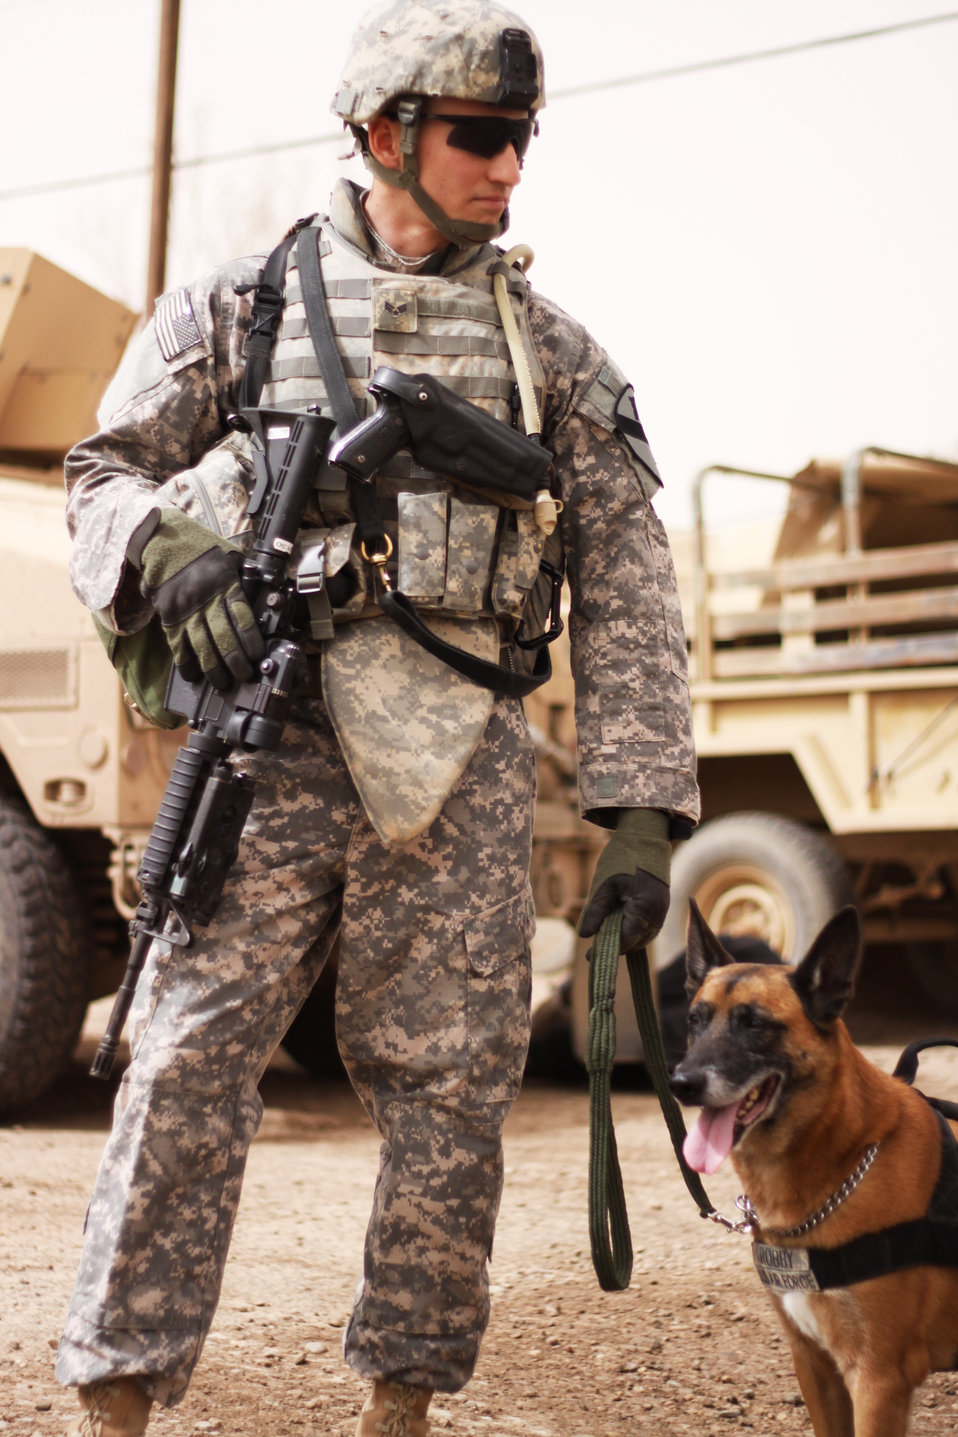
K-9, handler work together to keep servicemembers safe

Senior Airman William Bailey and Robby, an explosives detector dog, train together at Camp Taji, Iraq. Airmen Bailey is a Joint Expeditionary Tasking Airman from the 732nd Air Expeditionary Group attached to the Army's 1st Calvary Division.